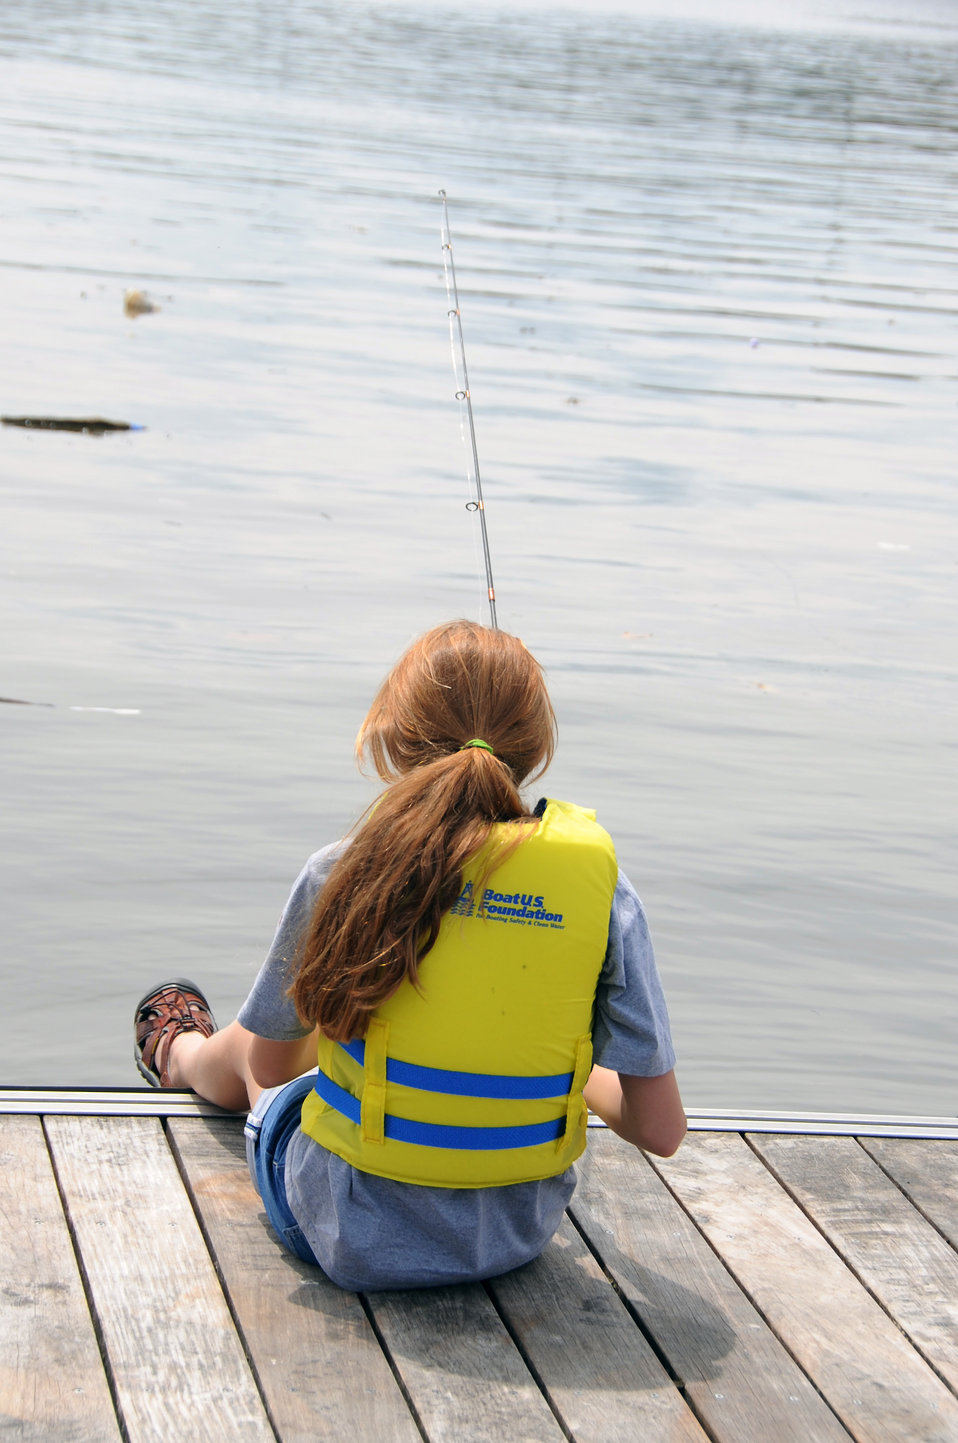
2013 National Fishing and Boating Week

Local students prepare to enjoy fishing at the annual kick-off of National Fishing and Boating Week on the Anacostia River in Washington D.C.